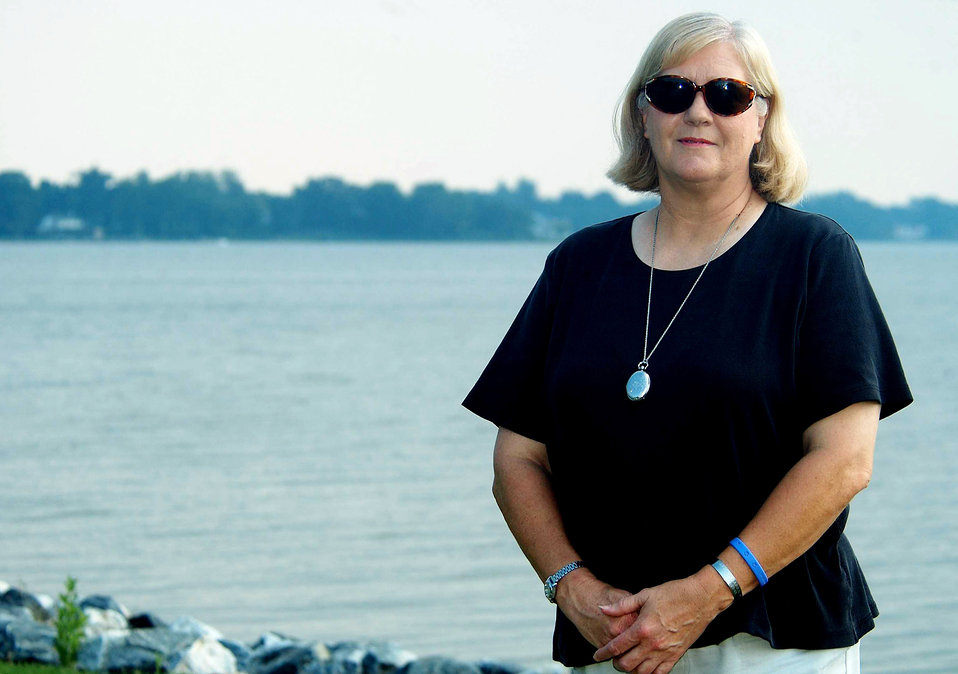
LANGLEY AIR FORCE BASE, Va. -- Nancy Lenz recently donated her bone marrow in an operation to potentially save someone's life. She is assigned to the 1st Fighter Wing's safety office here.